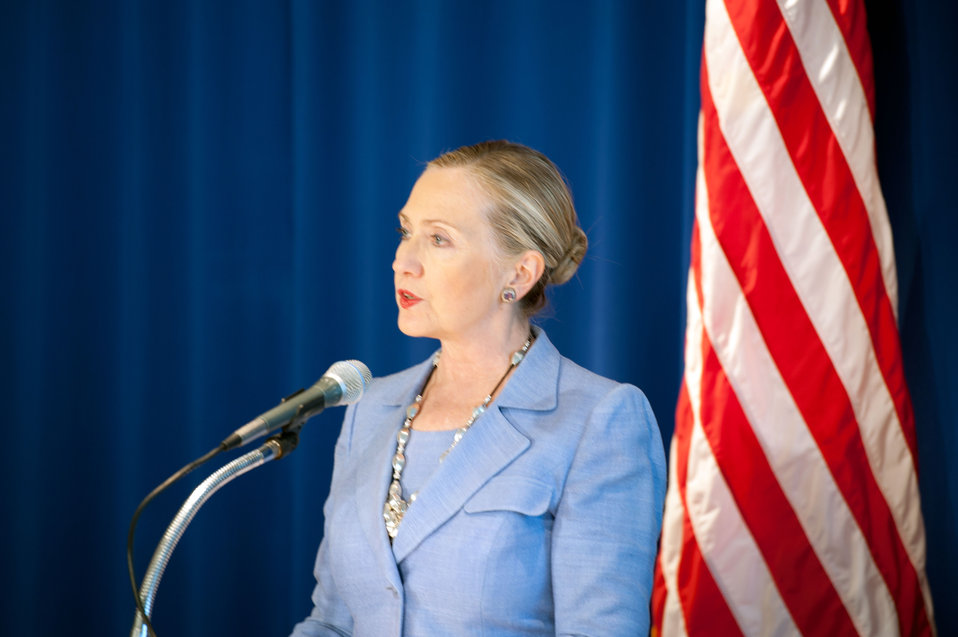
Secretary Clinton Addresses Burmese Media

U.S. Secretary of State Hillary Rodham Clinton addresses Burmese media at the U.S. Embassy in Rangoon, Burma, on December 2, 2011.